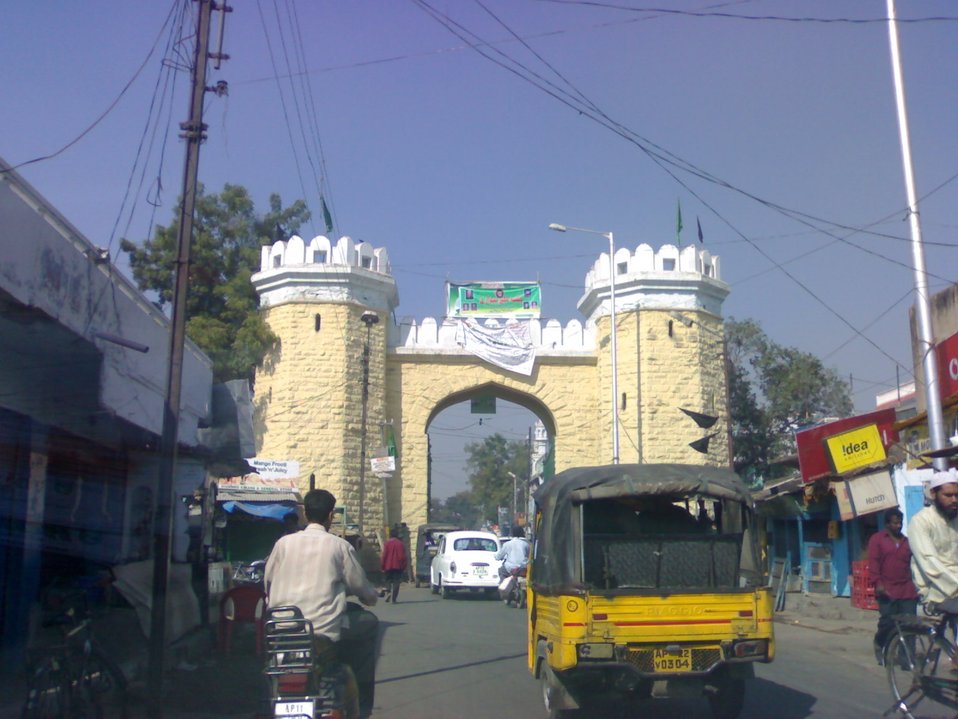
Dabeerpura Darwaza, one of the thirteen original gateways built during the Nizam's rule which served as an entrance to the Purani Haveli.